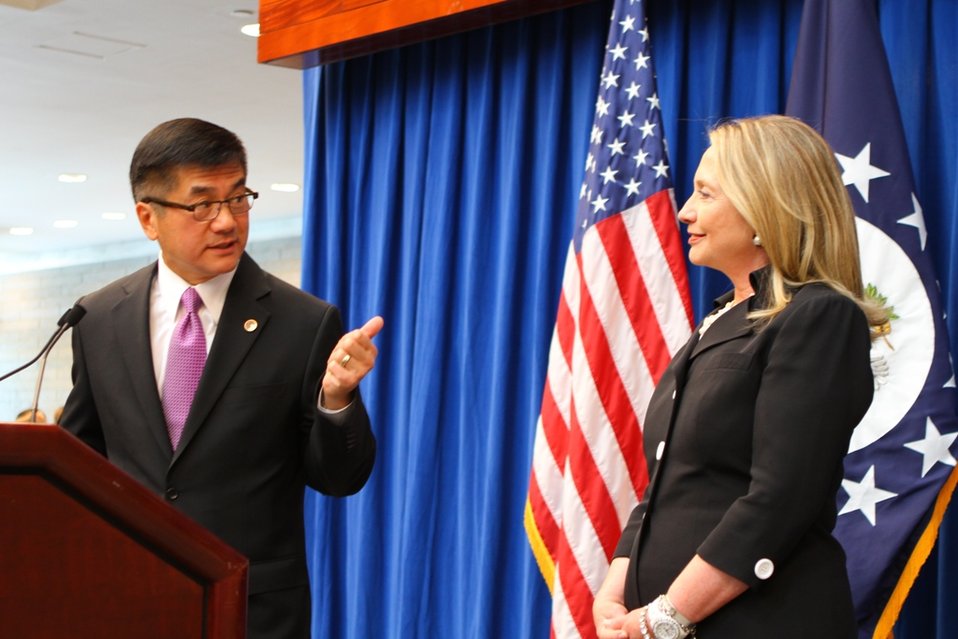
Ambassador Locke Introduces Secretary Clinton

U.S. Ambassador to China Gary Locke introduces U.S. Secretary of State Hillary Rodham Clinton at he U.S. Embassy in Beijing, China, September 5, 2012.